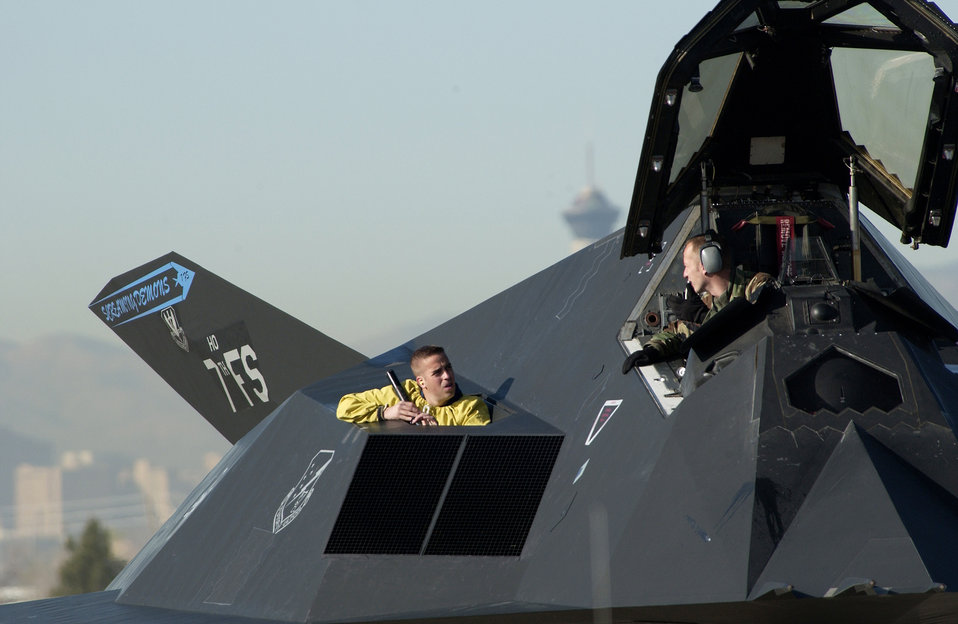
Nighthawk talk

NELLIS AIR FORCE BASE, Nev. -- Staff Sgt. Robin Walker (left) and Staff Sgt. Greg Slavik prepare an F-117 Nighthawk stealth fighter to launch from here. Aircraft, aircrews, maintainers and support Airmen from around the globe are here during March to participate in Red Flag, an Air Force exercise that tests warfightering skills in real-time combat situations. This is the Department of Defense's first Joint Red Flag exercise, in which more than 10,000 servicemembers from all four military branches, along with troops of some coalition forces, will train in an effort to develop improved joint training and experimentation capabilities. Sergeants Walker and Slavik are crew chiefs assigned to the 49th Aircraft Maintenance Squadron at Holloman Air Force Base, N.M.